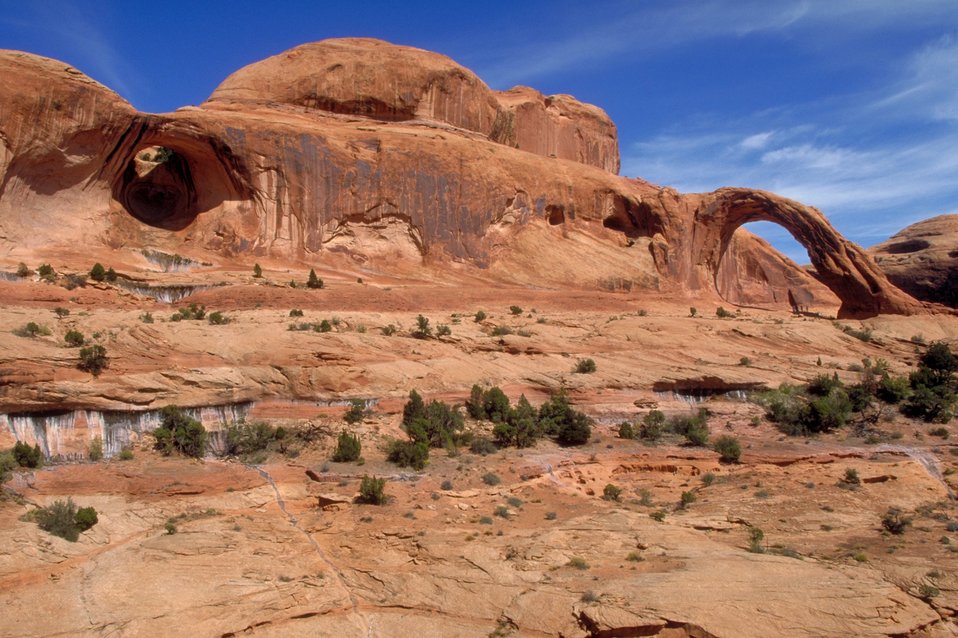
Corona and Bowtie arches near Moab, Utah.